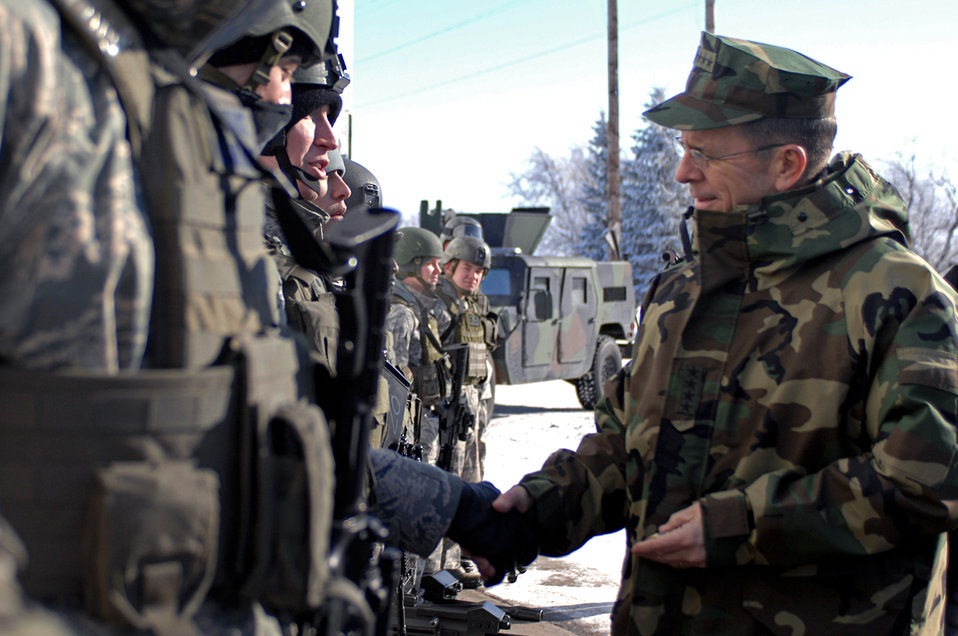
JCS chairman visits Minot

Adm. Michael G. Mullen, chairman of the Joint Chiefs of Staff, shakes hands with 91st Missile Wing security forces Airmen during a visit Feb. 18 to Minot Air Force Base, N.D. He expressed his faith in the nuclear mission there and his appreciation of the hard work of the Airmen.